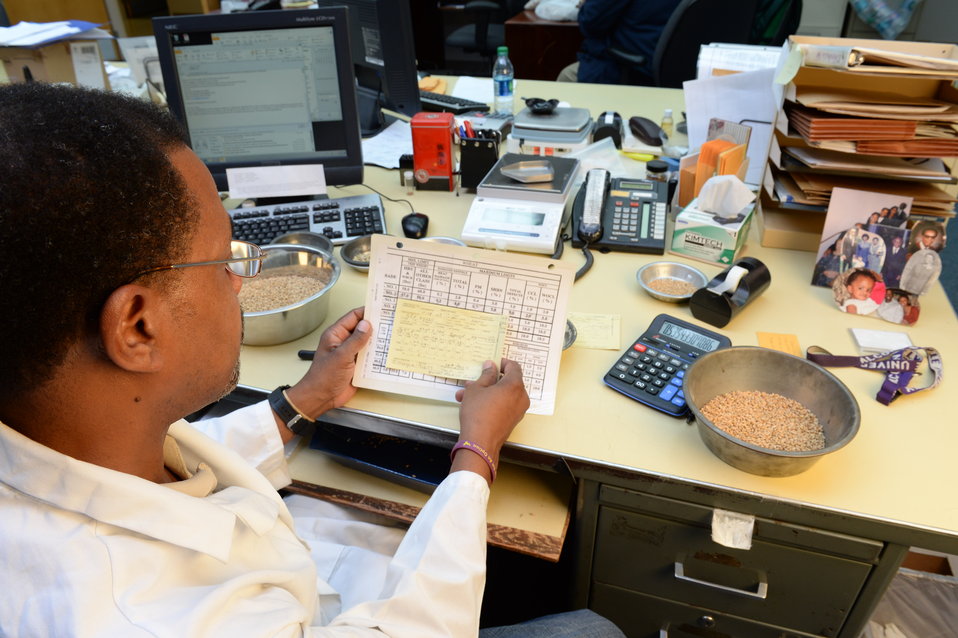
U.S. Department of Agriculture (USDA) Grain Inspection, Packers and Stockyards Administration (GIPSA) Federal Grain Inspection Service (FGIS) employee compares results of tests done on wheat samples against wheat standards chart at the FGIS inspection laboratory in New Orleans, LA on Monday, Nov. 18, 2013.